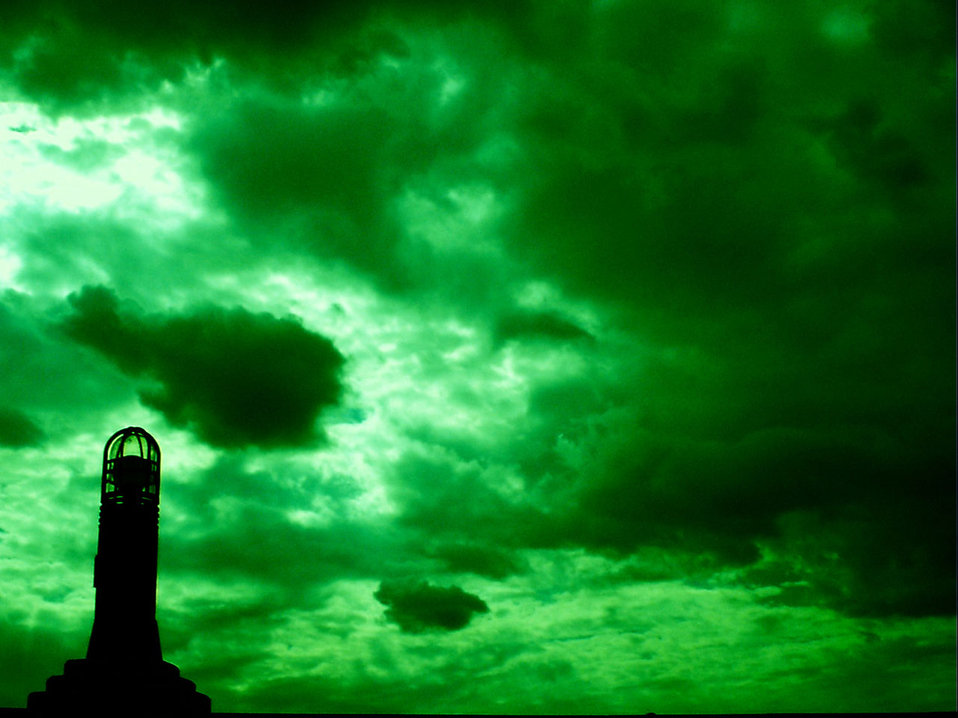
Night vision

This is a shot i took of a light fixture on top of a bridge in kansas city, mo..